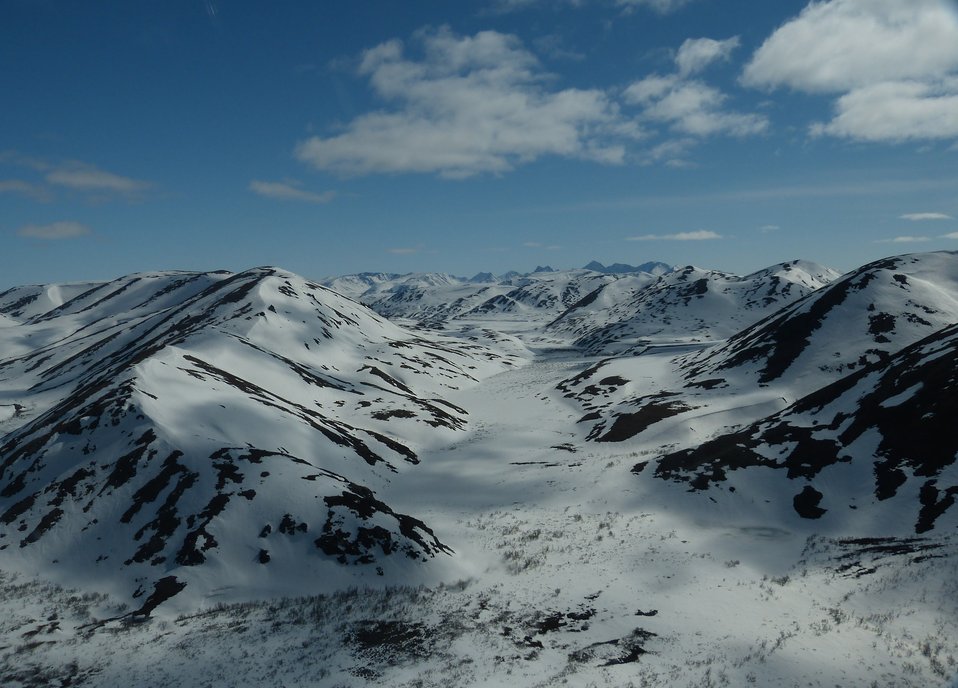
Kilbuck Mountains May2013 KSowl

Cliff-nesting raptor survey, Kilbuck Mountains, Yukon Delta National Wildlife Refuge

Photo credit: Kristine Sowl,
USFWS, YDNWR